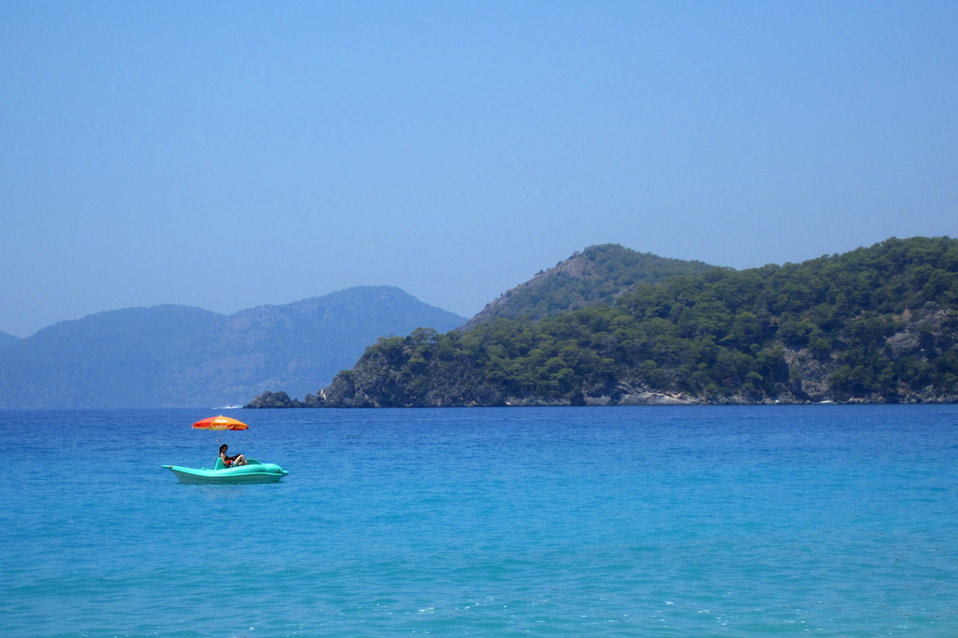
Pedalo at sea

Pedal boat at sea with land in background.